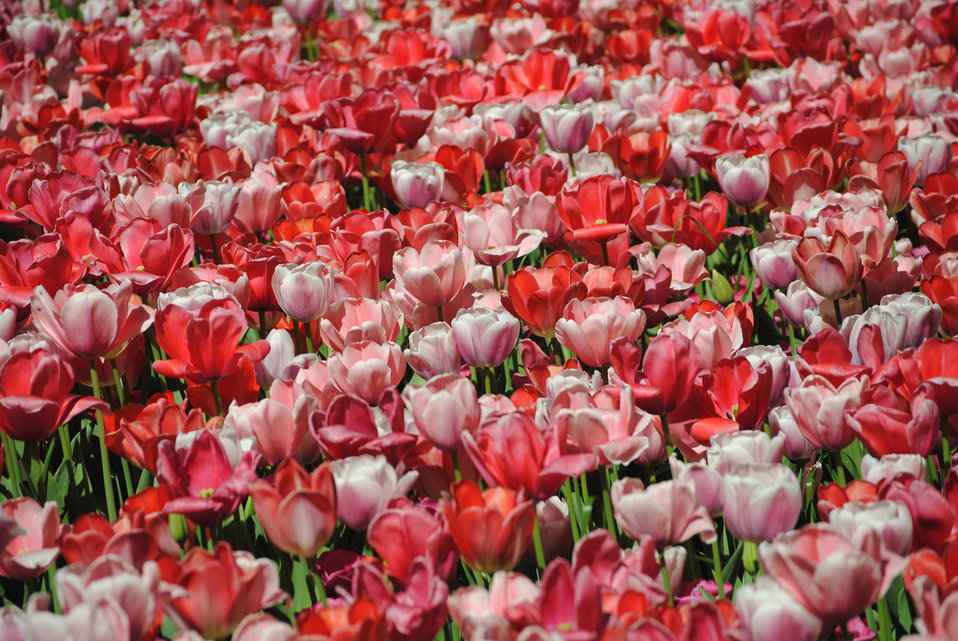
Tulip field.